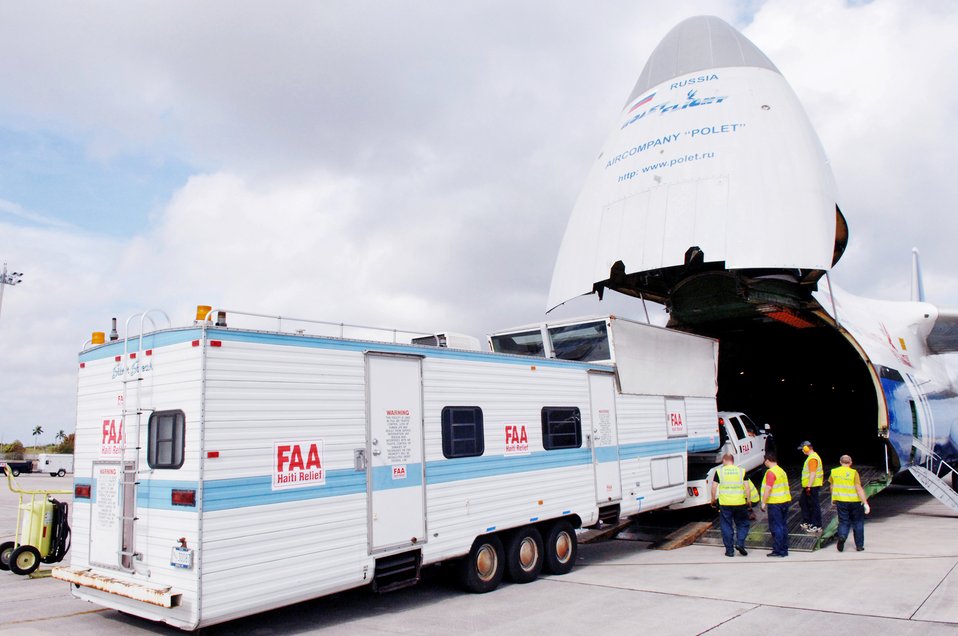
Air Force, FAA use Russian aircraft to move mobile air traffic control tower to Haiti

A mobile air traffic control tower is loaded onto a Russian Antonov An-124 cargo plane at Homestead Air Reserve Base, Fla., Jan. 21, 2010. The mobile air traffic control tower will increase the efficiency of aid being delivered to earthquake victims in Haiti.